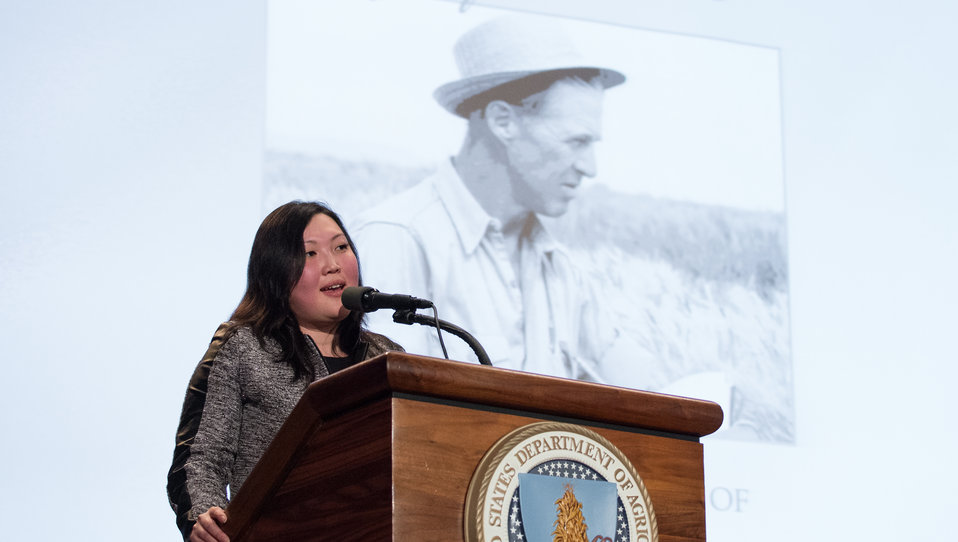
The World Food Prize Foundation Director of planning Bian Li presents her work to help achieve Dr. Borlaug’s vision as the next generation of hunger fighters at the Borlaug Symposium at the Borlaug Symposium commemorating the late Dr. Norman E. Borlaug's 100th Birthday hosted by the U. S. Department of Agriculture (USDA) in the Jefferson Auditorium of USDA in Washington, D.C. on Tuesday, Mar. 25, 2014. The symposium highlighted current efforts addressing global hunger.